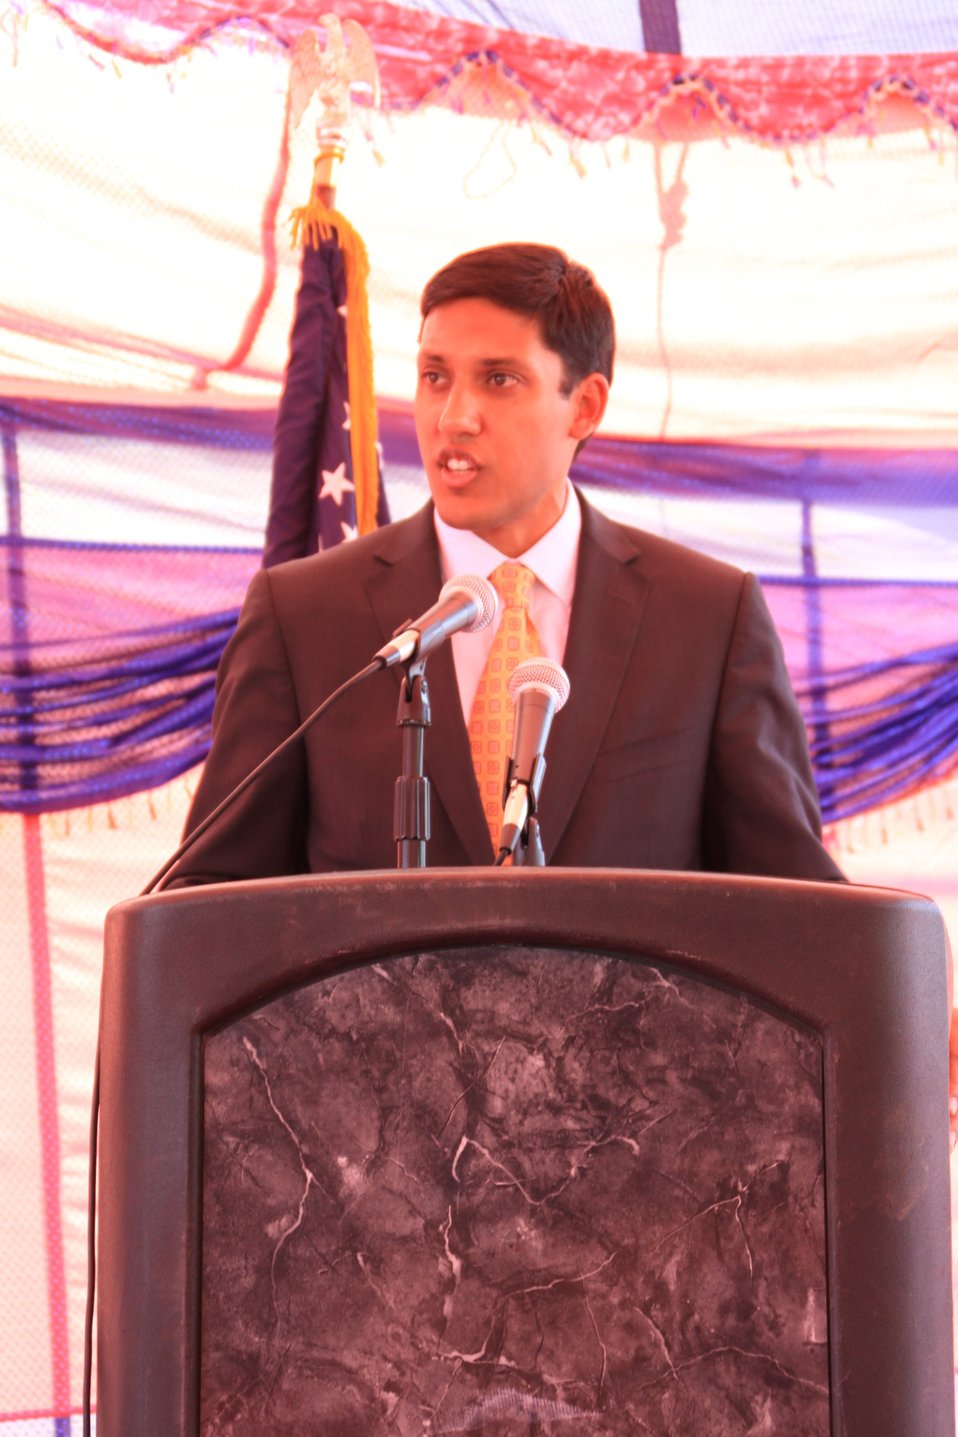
Badam Bagh Farm